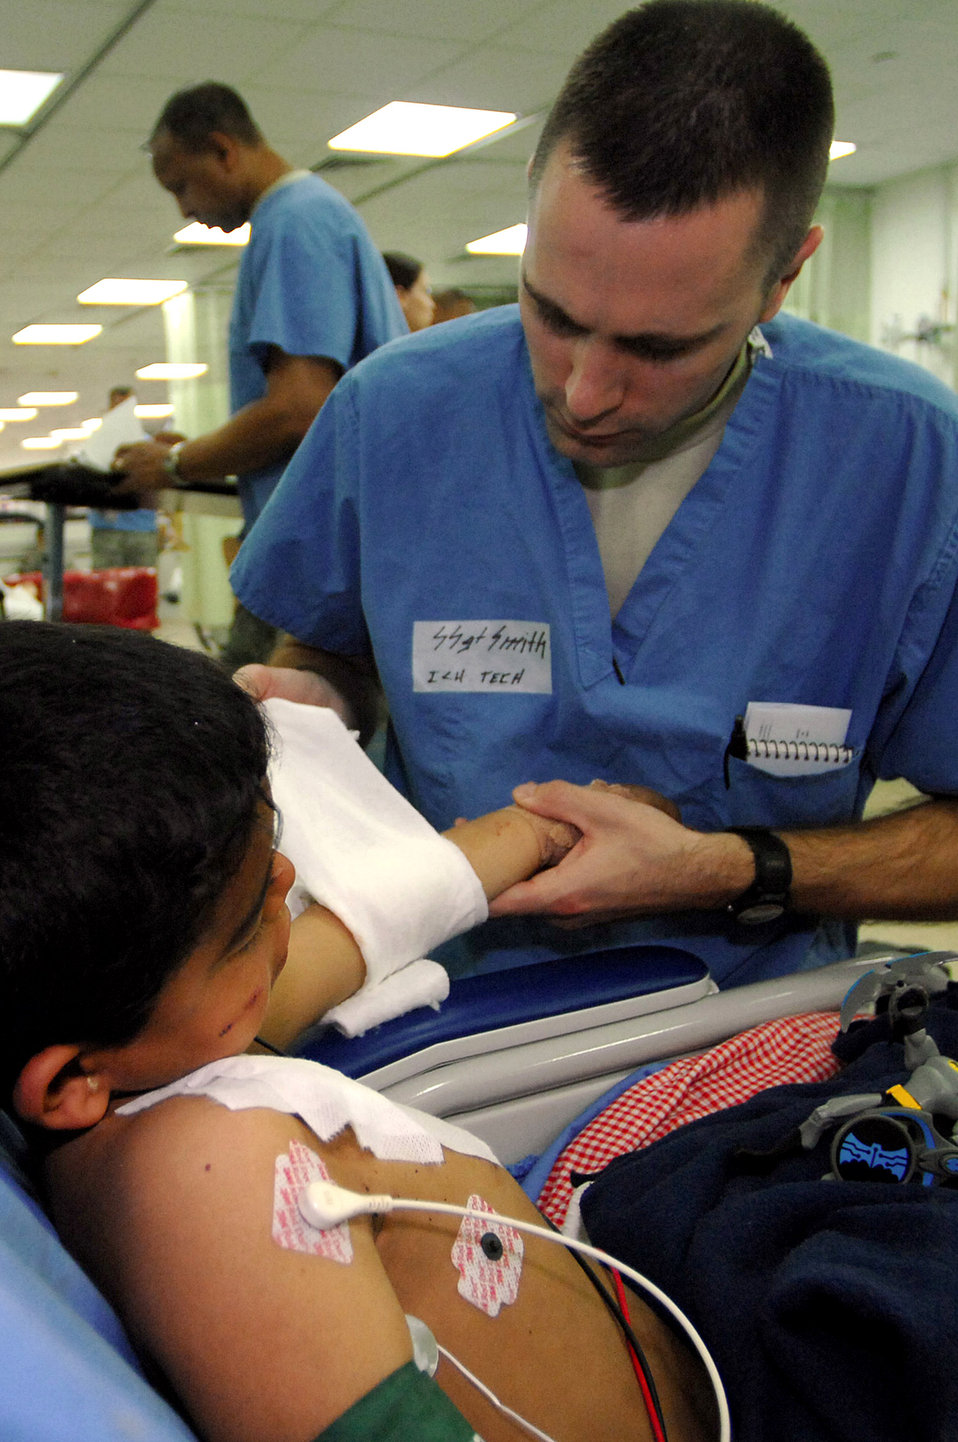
Airmen treat Iraqi children injured in mortar attack

Staff Sgt. Delbert Smith treats an Iraqi child at the Air Force Theater Hospital Feb. 19 at Balad Air Base, Iraq. The child was injured by an 82-millimeter mortar round, which struck a soccer field where he and other children were playing in the village of Al Jumia. A 12-year-old Iraqi child was killed and seven others were wounded during the attack. The village lies to the north of Balad AB. Four rounds were launched toward the base, but all fell short. However, two of the rounds struck the field where children were playing. Sergeant Smith is a 332nd Expeditionary Medical Operations Squadron intensive care unit technician deployed from Keesler Air Force Base, Miss.